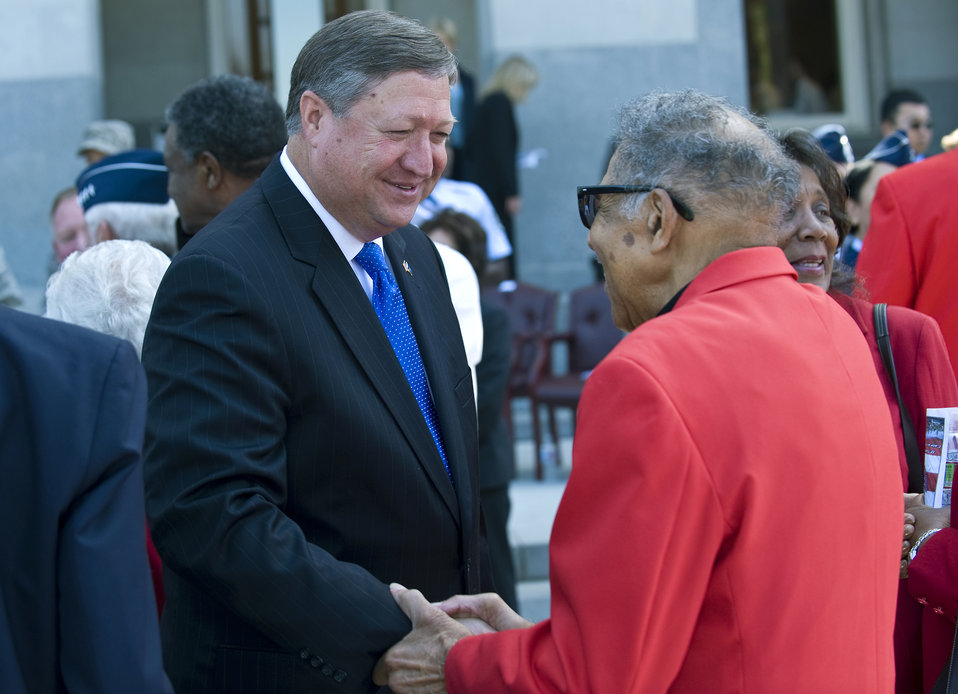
Air Force Week-Sacramento

Secretary of the Air Force Michael Donley greets retired Tech. Sgt. Boyd Taylor, a Tuskegee Airman from Sacramento’s Col. George S. “Spanky” Roberts chapter of the Tuskegee Airmen, after a proclamation ceremony Sept. 8 at the California State Capitol building’s West steps. The proclamation named Sept. 8 to 13, 2009 as Air Force Week-Sacramento. The ceremony featured a flyover by a C-17 Globemaster III and a KC-10 Extender, as well as performances by the Air Force Band of the Golden West and the Air Force Drill Team. Air Force Week-Sacramento presents activities and exhibitions used to educate the community about the Air Force's capabilities and missions. Other Tuskegee Airmen in attendance were retired Maj. Larry Brown, Retired 1st Lt. Milford Craig and retired Senior Master Sgt. George Porter. Also in attendance was Ms. Gloria Edith Roberts, widow of the late Col. George S. Roberts, the first black commander of the 99th Pursuit Squadron and the namesake of the Sacramento chapter of the Tuskegee Airmen.